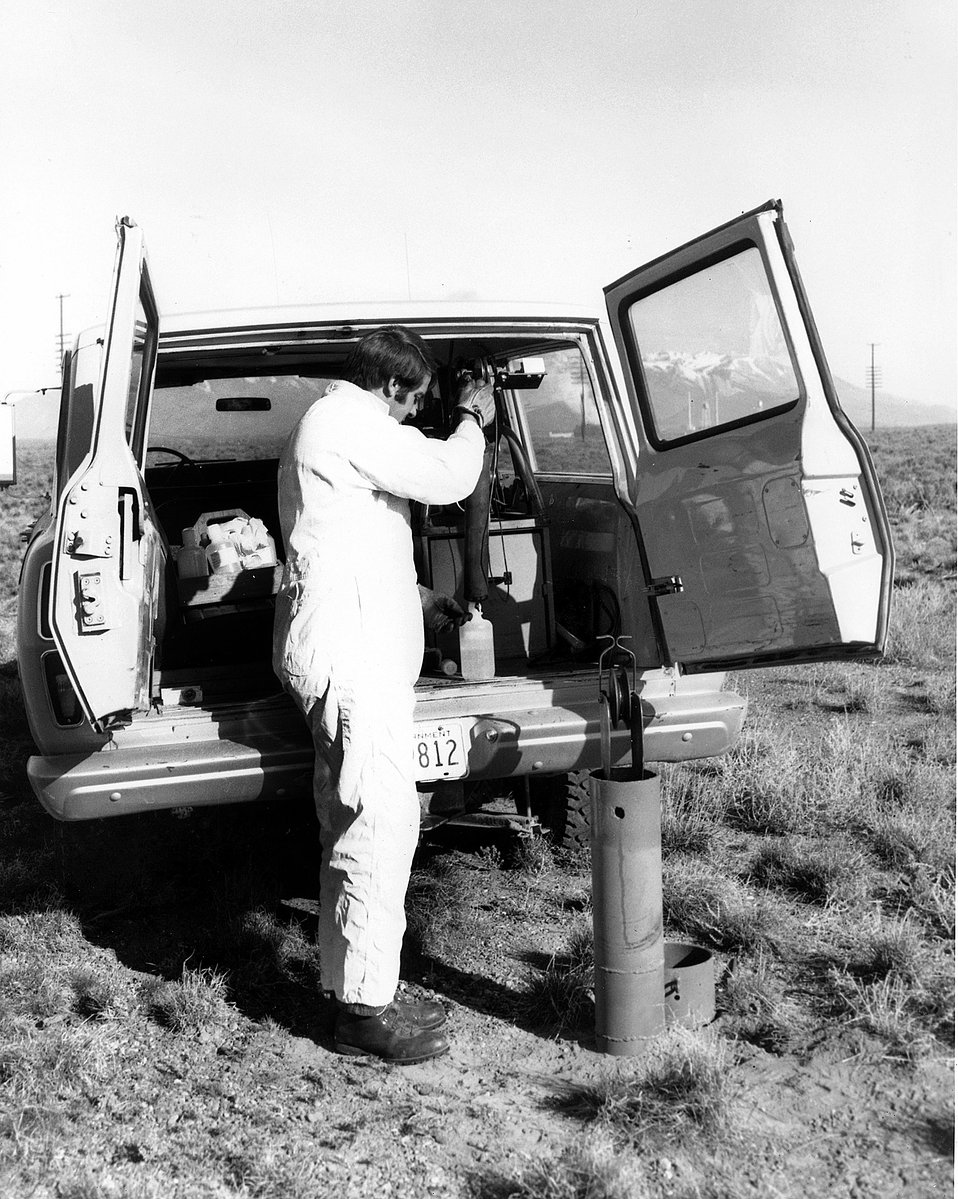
Water samples are routinely taken from the US Geological Survey sample wells throughout the AEC's National Reactor Testing Station in Idaho.